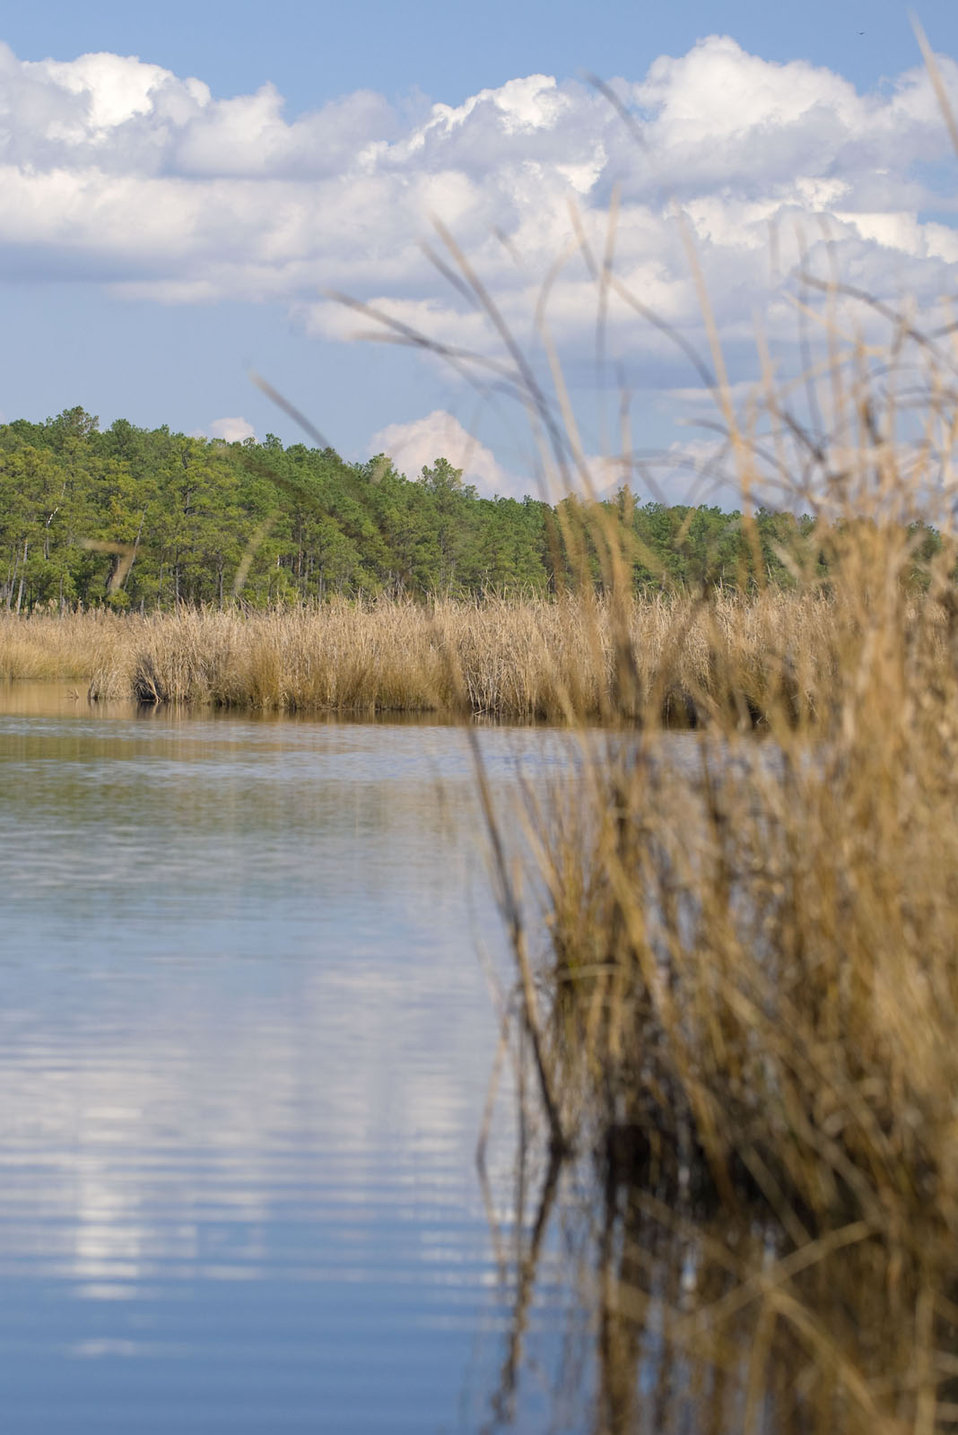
Wetlands Help Recharge Groundwater

Wetlands also play a key role in recharging groundwater. Even wetlands without an obvious surface water connection store and slowly release water into groundwater, aquifers and surface waters. The storage capacity of wetlands can be enormous. For example, South Carolina’s pocosins and hardwood swamps are estimated to store 4.58 billion gallons of water, or enough to fill 7,000 Olympic-size swimming pools. The cost to construct stormwater treatment facilities to detain this volume of water is estimated at more than $200 million.